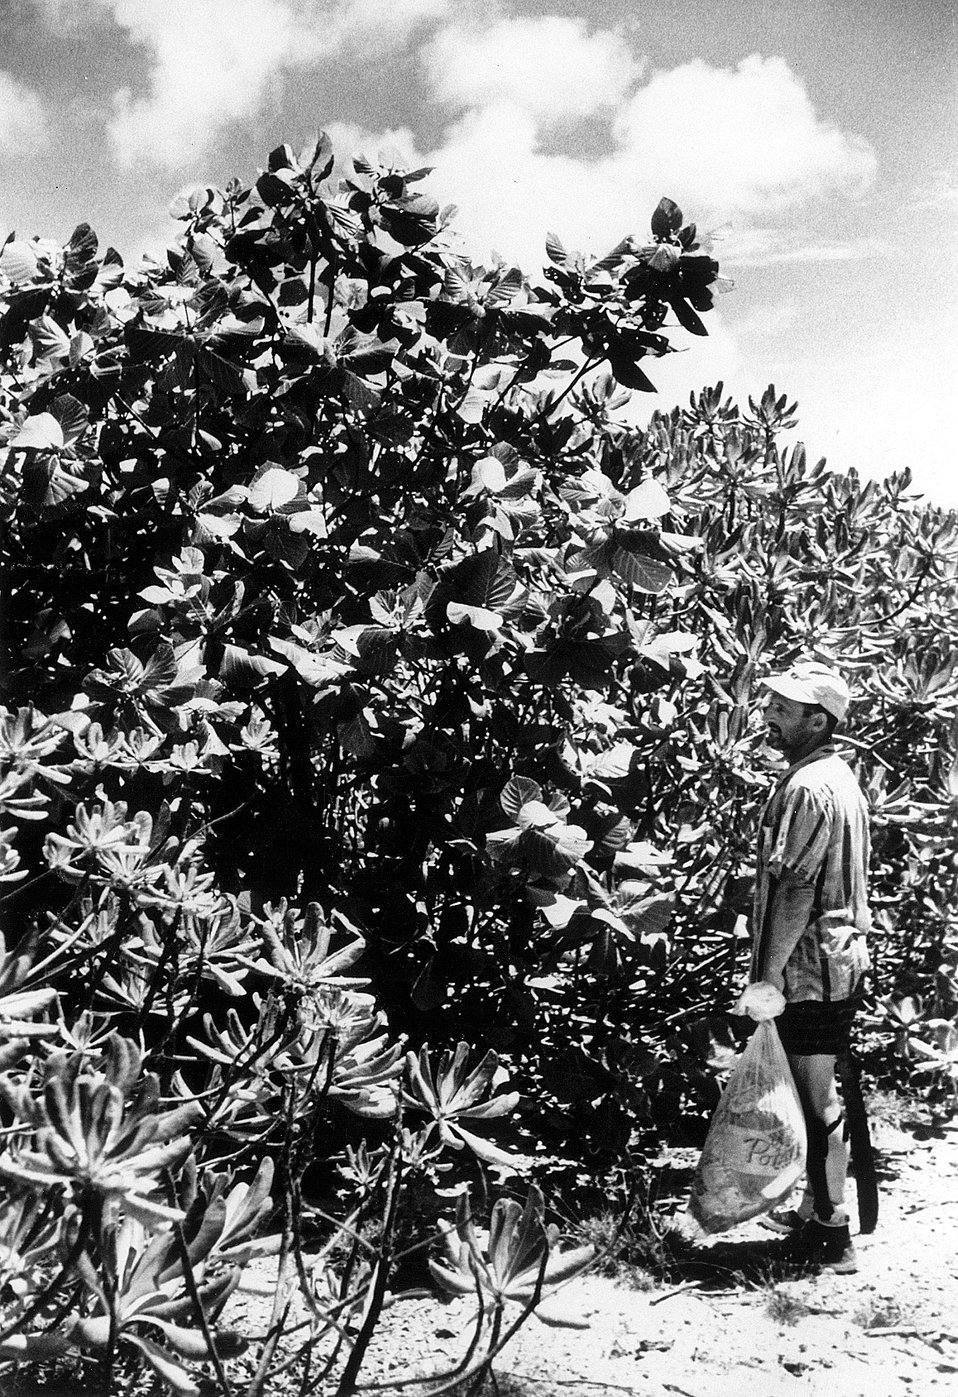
Six years after last nuclear testing on Bikini Islands, scientists check condition of Bikini Islands.
c.1964